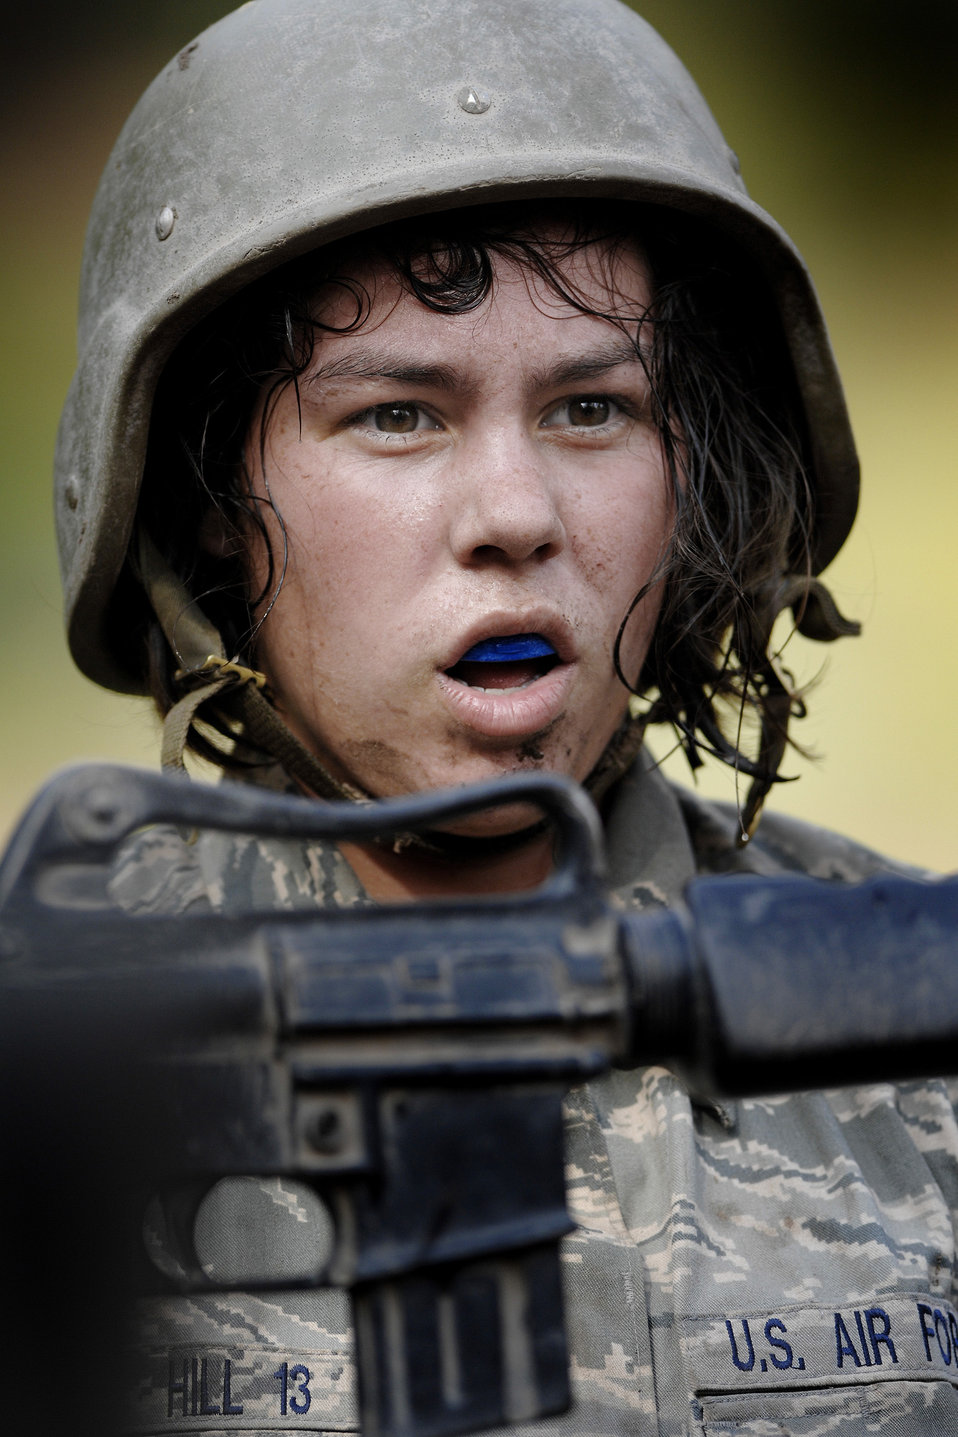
Academy basic field training at Jacks Valley

Air Force Academy Basic Cadet Casandra Hill focuses on keeping her rifle steady July 21 at the Jacks Valley Assault Course near Colorado Springs, Colo. Basic cadet training started June 25 and continues through Aug. 1.